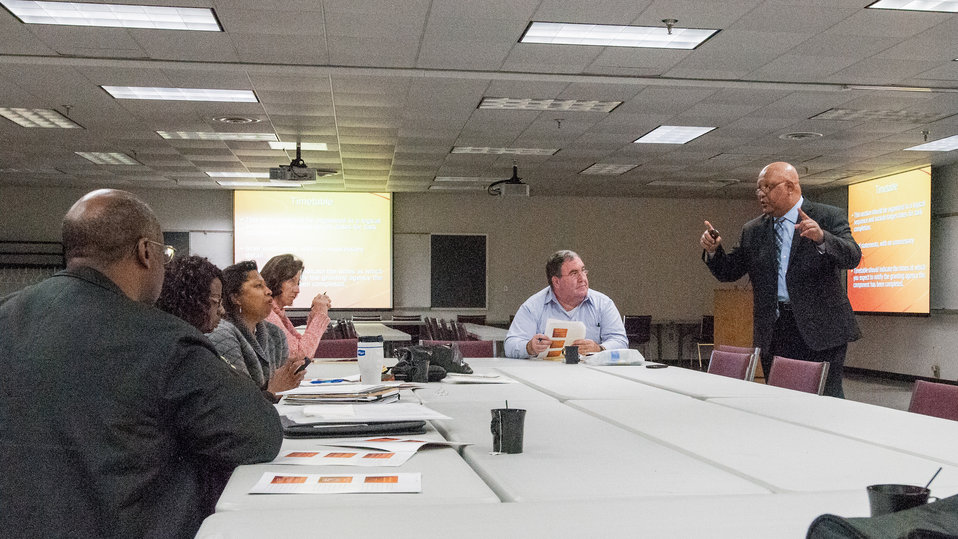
Fort Valley State University Southern Region SARE Program1890 Land Grant Liaison James H. Hill took farmers through the ins-and-outs of 'How to write a Winning Proposal & Identify Potential Grant Sources for Producers” during the “Virginia State University (VSU), USDA and Virginia Farmers Working Together” outreach workshop in the VSU, L. Douglas Wilder building on Thursday, March 7, 2013, in Petersburg, VA. Farmers shared and learned new ways to do more with USDA services, and how to apply for programs that will help grow their business.